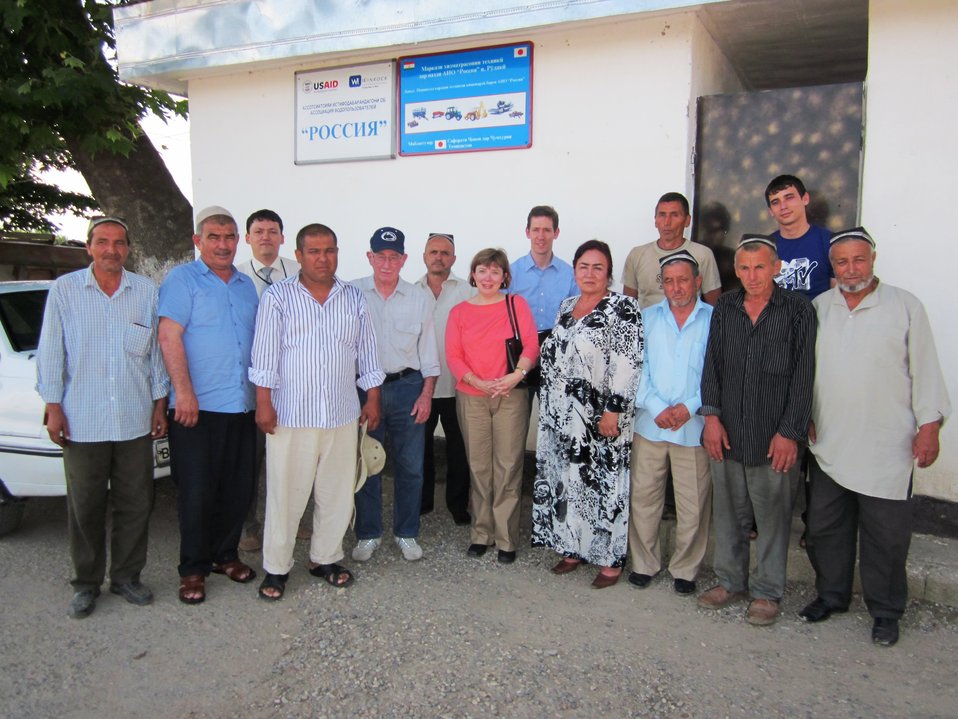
Senior Advisor Madelyn Spirnak and Foreign Affairs Officer Dano Wilusz Visit USAID-Supported Water Users' Association

Senior Advisor for Biotechnology in the Bureau of Economic and Business Affairs Madelyn Spirnak and Dano Wilusz, a Foreign Affairs Officer in the Bureau of Oceans, Environment, and Science, visit USAID-supported Water Users' Association in Dushanbe, Tajikistan, June 10, 2010.